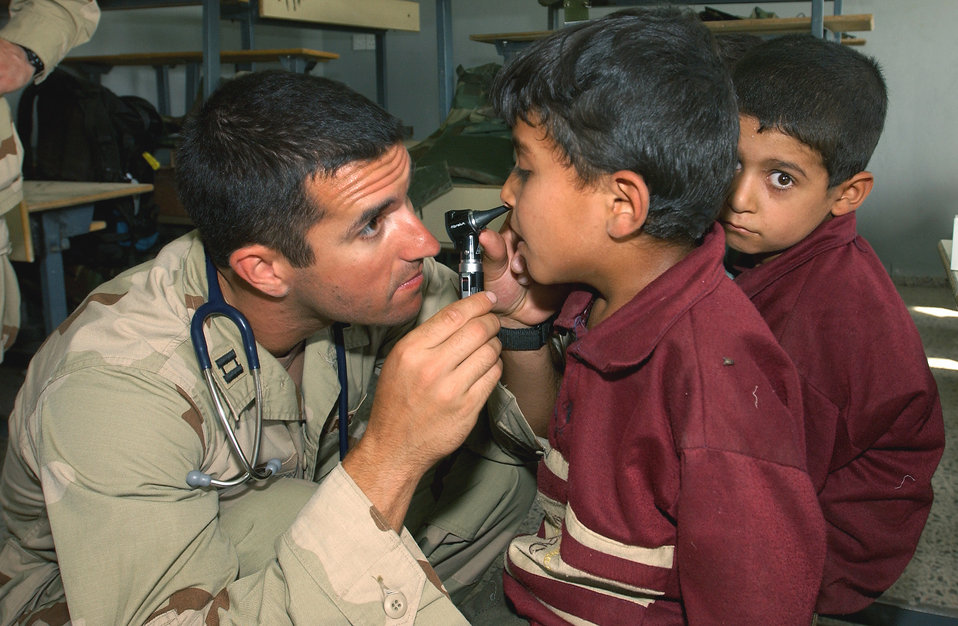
Visiting the doc

SWABE, Iraq -- Capt. Jeff Skinner examines a young Iraqi boy here during a medical and humanitarian assistance mission. Skinner is deployed with the 101st Expeditionary Rescue Squadron from Langley Air Force Base, Va.